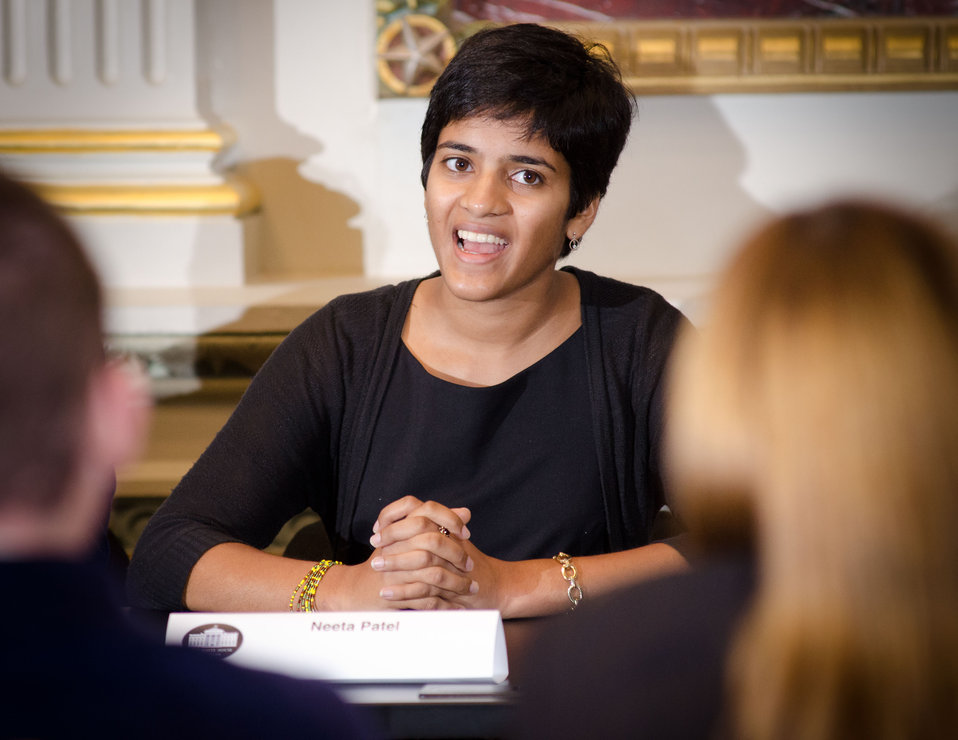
4-H member and Youth Champions of Change panelist Neeta Patel speaks during the Champions of Change Recognition event in the Indian Treaty Room of the Executive Office Building in Washington, D.C. on Tuesday, Oct. 9, 2012. The Champions of Change program was created to honor ordinary Americans doing great work in their communities. Each week, a different sector is highlighted and groups of Champions, ranging from educators, entrepreneurs and community leaders, are recognized for the work they are doing to serve and strengthen their communities.